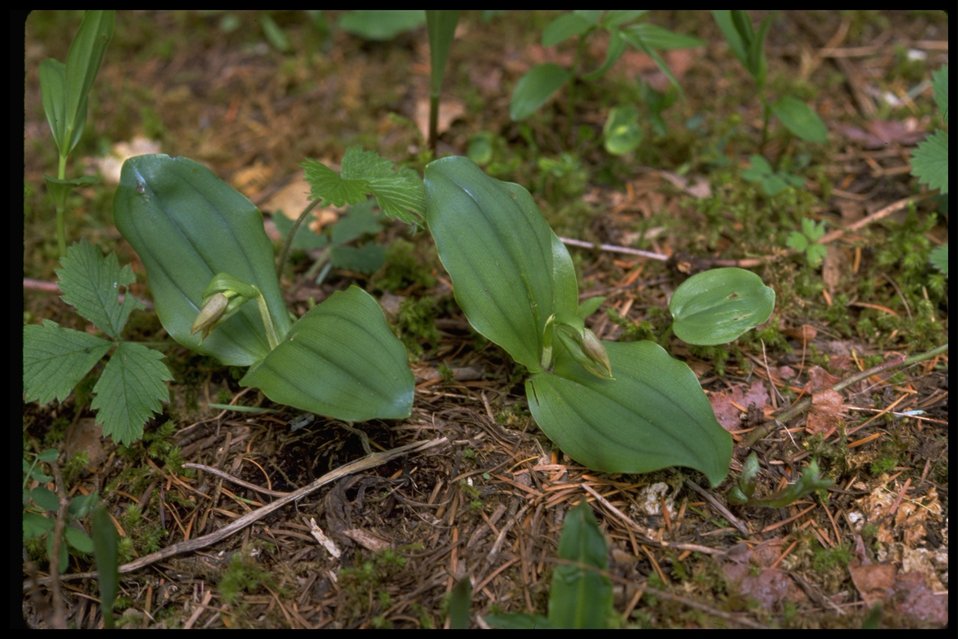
Cypripedium fasciculatum, commonly known as Clustered Lady's Slipper.